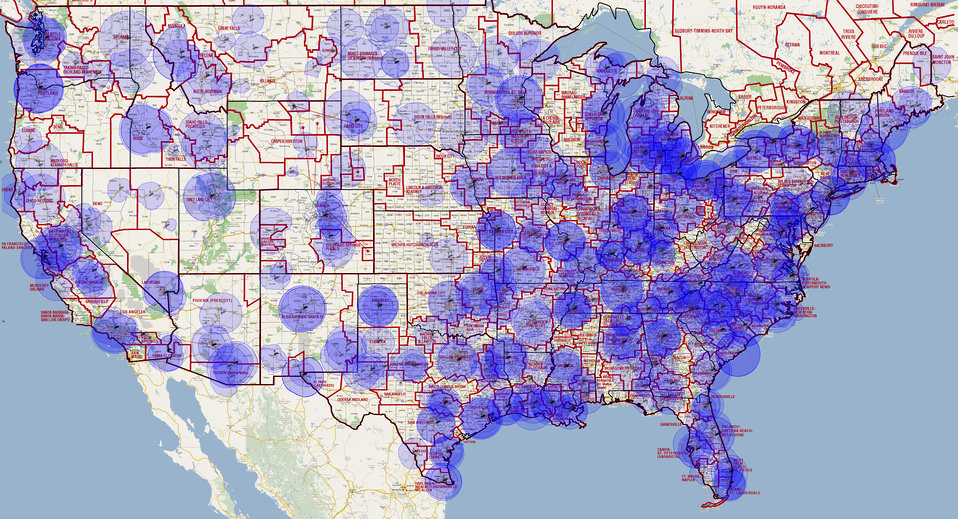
whole us dma blue